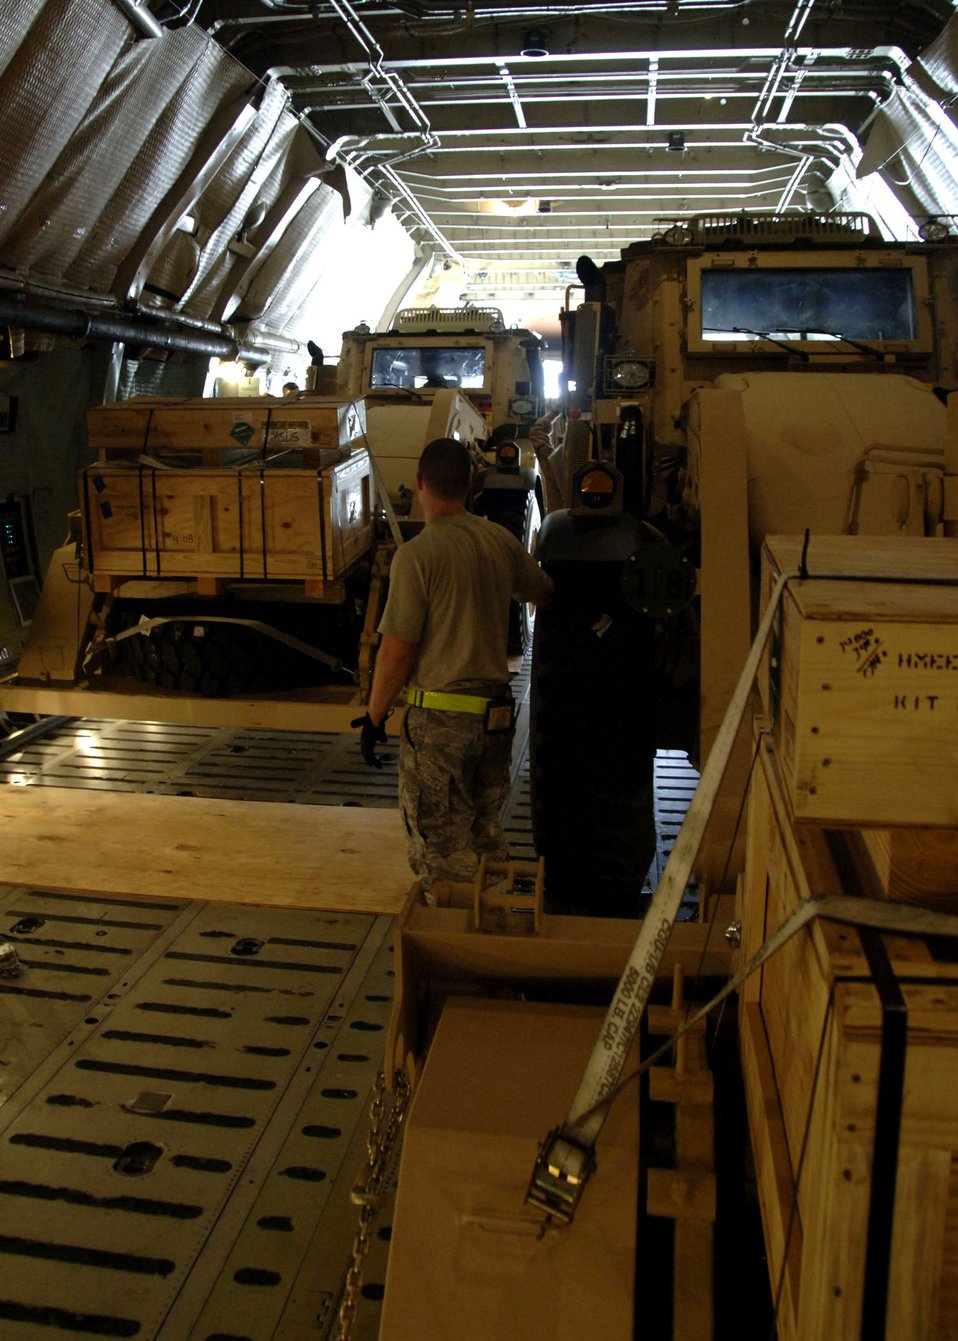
Charleston Airmen begin transporting new Army vehicles

Airmen position Army High Mobility Engineer Excavators in the rear of a C-5 Galaxy Sept. 29 at Charleston Air Force Base, S.C. Aerial porters have to ensure there is equal weight distribution so aircraft do not experience difficulties taking off.